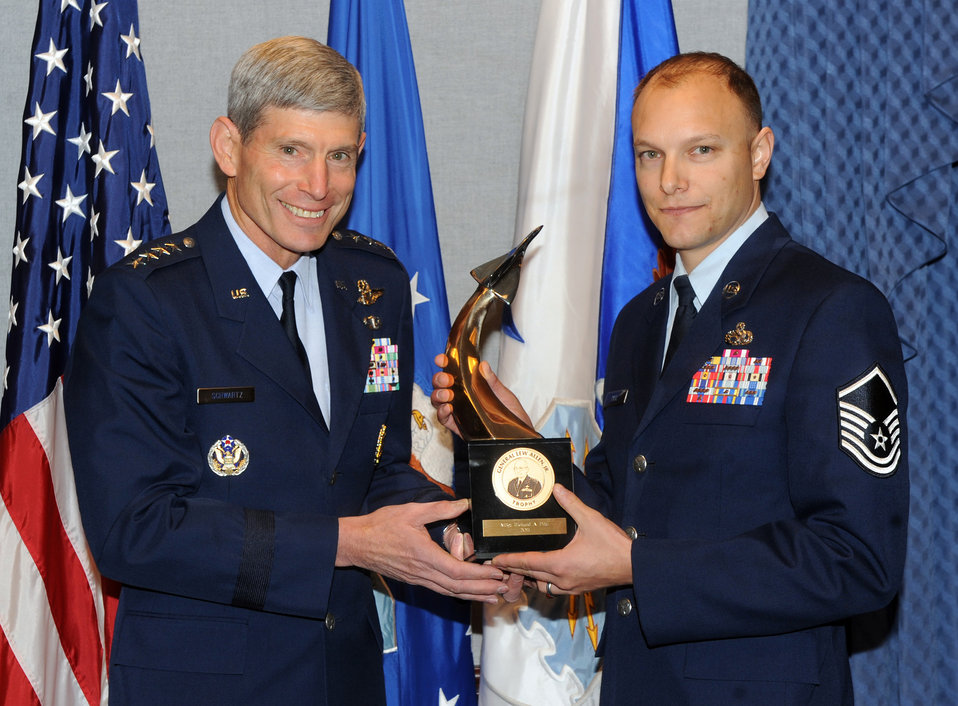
2011 Lew Allen Trophy

Air Force Chief of Staff Gen. Norton Schwartz presents the Gen. Lew Allen Jr. Trophy to Master Sgt. Richard Piltz during a ceremony herein the Pentagon, Oct. 28, 2011. The trophy is awarded annually to a base-level officers and senior NCOs noncommissioned officer in aircraft, munitions or missile maintenance fields directly involved in sortie generation.